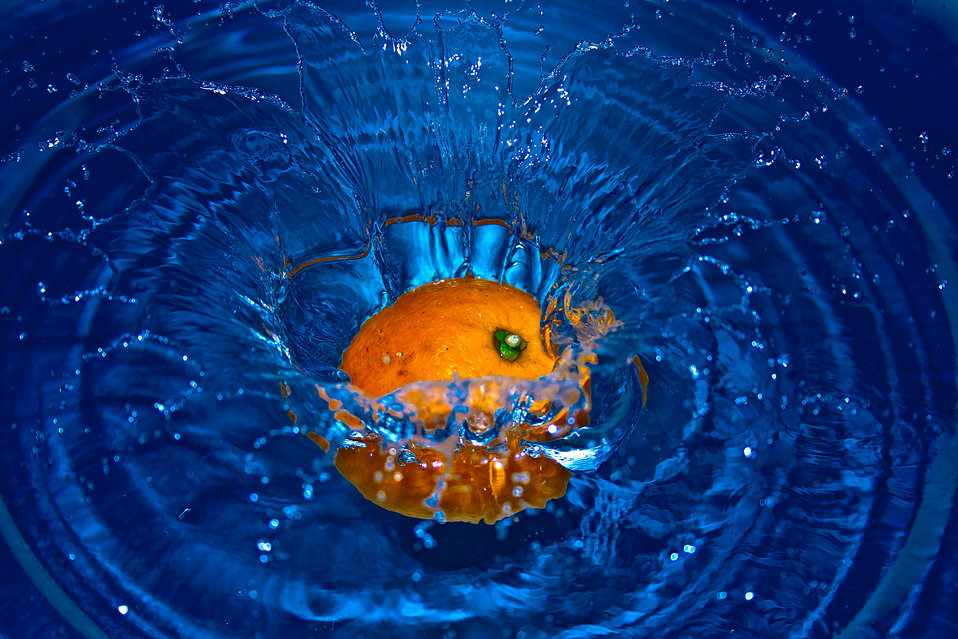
Splash #3

A half of orange falling into water bowl.